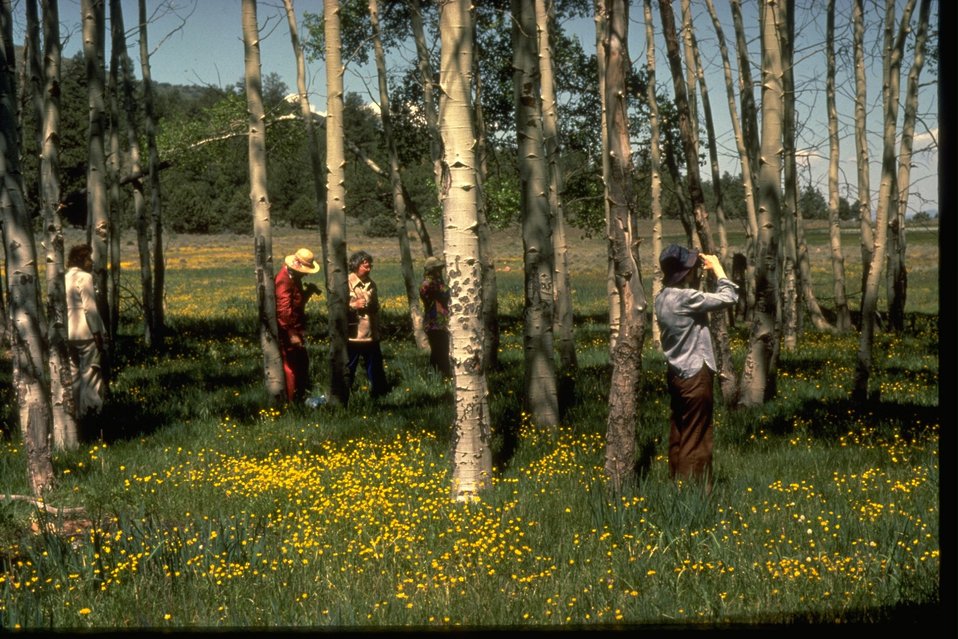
Bird watchers standing in small clump of trees on a sunny day.